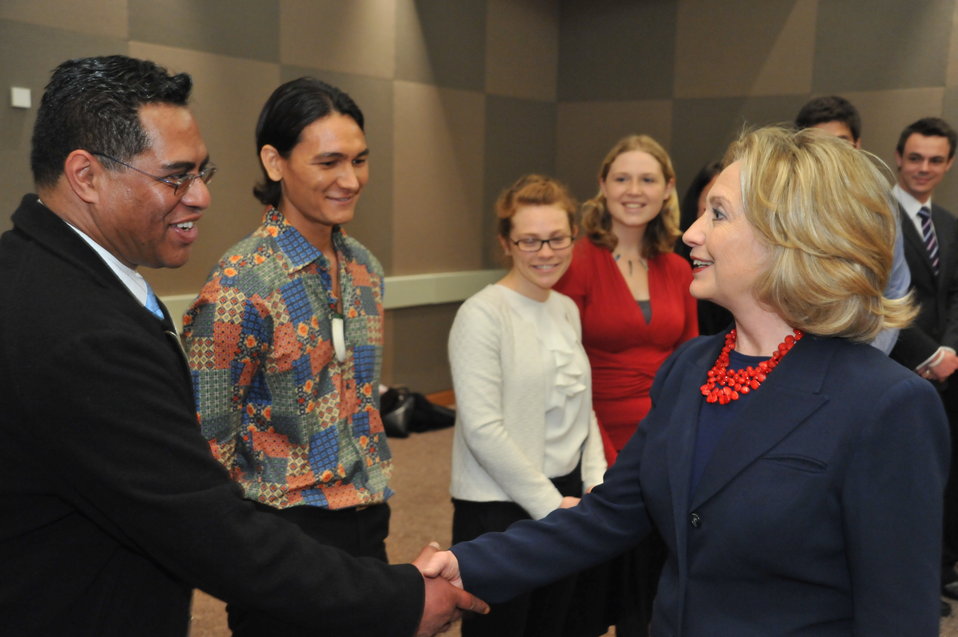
Secretary Clinton Shakes Hands With New Zealand Students

U.S. Secretary of State Hillary Rodham Clinton shakes hands with students at the “Meet and Greet” with the Ambassador's Advisory Group in Wellington, New Zealand, on November 5, 2010.